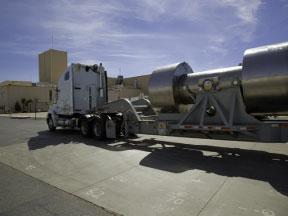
TRU Shipments to WIPP

Arrival of the first Oak Ridge, Tennessee shipment of Remote-Handled Transuranic Waste at the Waste Isolation Pilot Plant near Carlsbad, New Mexico.